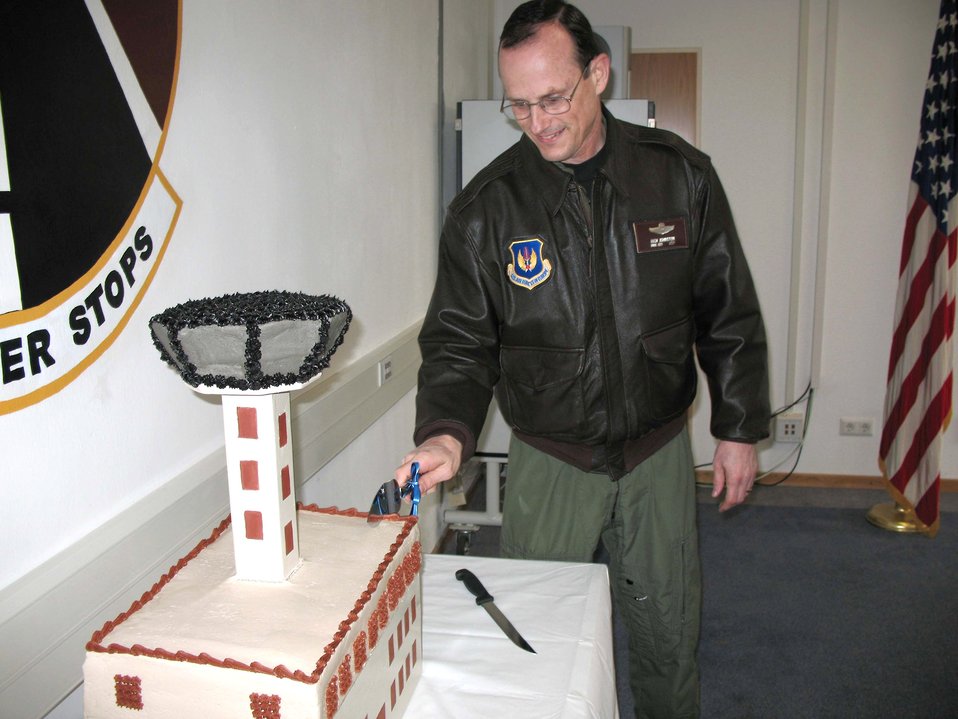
New tower cab opens at Ramstein

Brig. Gen. Richard Johnston cuts a tower of a cake March 13 in celebration of the new tower cab that opened at Ramstein Air Base, Germany. General Johnston is the 86th Airlift Wing commander.